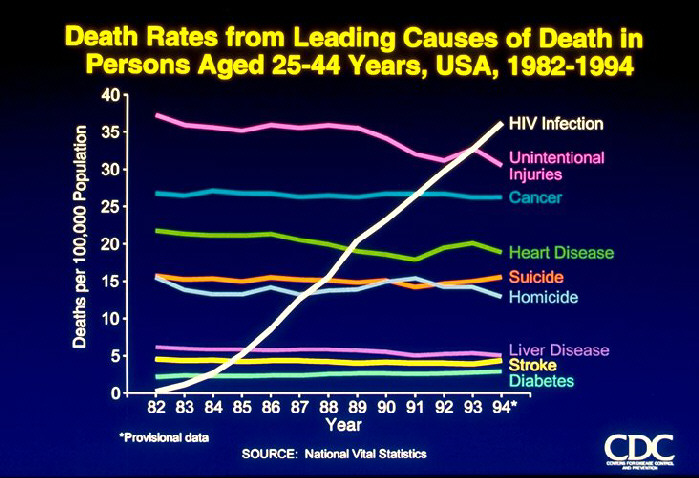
Death Rates from Leading Causes of Death in Persons Aged 25-44 Years, USA, 1982-1994 (graph)